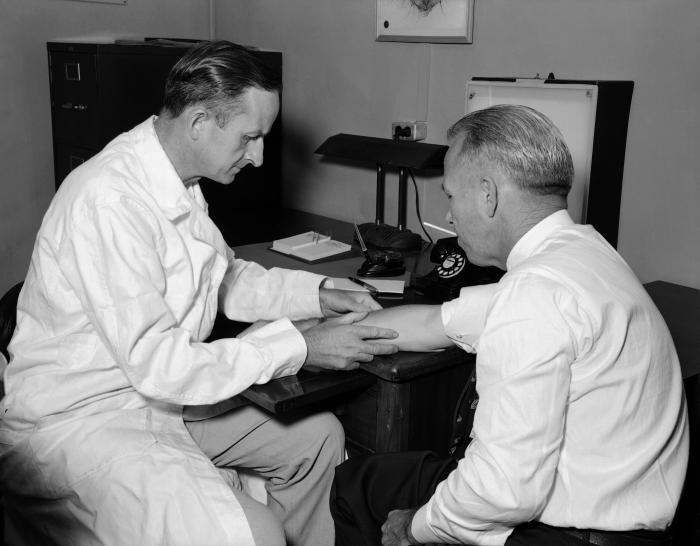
This historic 1952 image showed Dr. Malcolm Ferguson as he was examining the arm of Dr. Scragz for any signs of possible schistosomiasis infection, while they were seated in the Centers for Disease Control's Puerto Rican Schistosomiasis Laboratory.